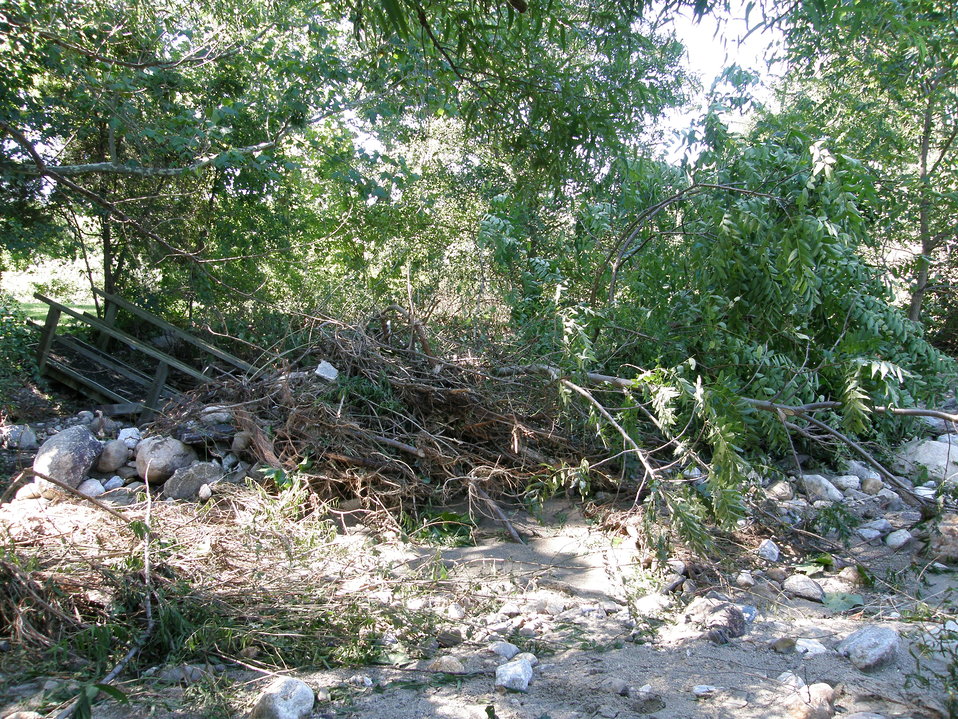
Hurricane Damage at Wallkill River National Wildlife Refuge August 30, 2011

Damage to Dagmar Dale Trail, Sussex, NJ.